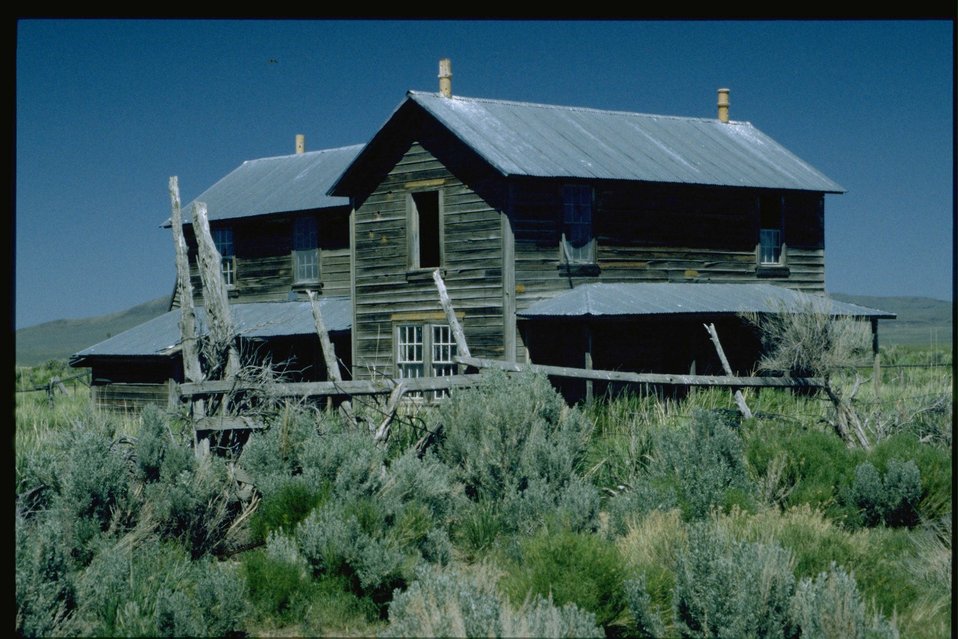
Shirk Ranch.